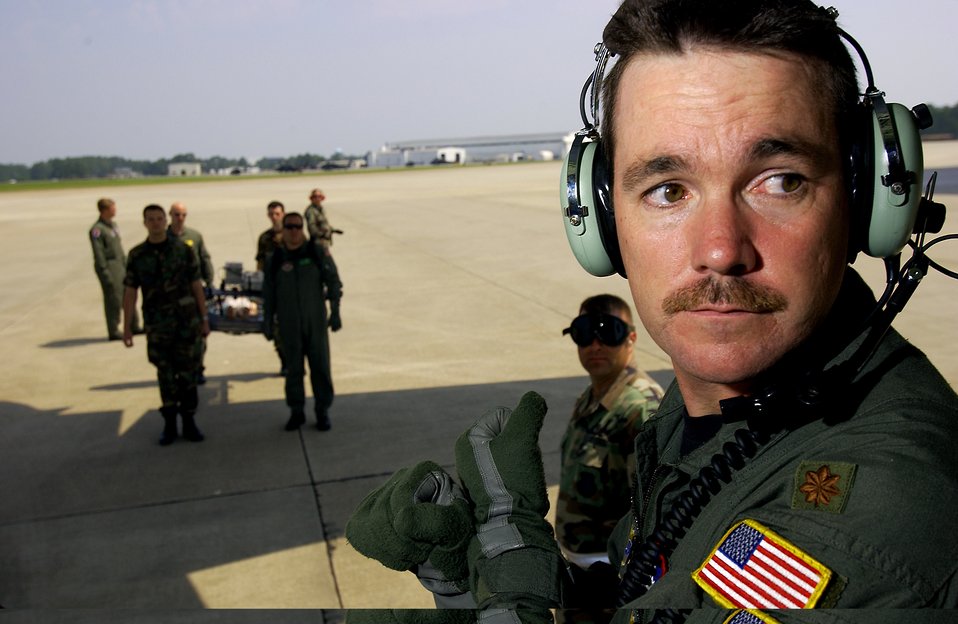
Patiently waiting

GULFPORT, Miss. -- Maj. Barry Pettite stalls an emergency medical crew carrying a "patient" to a C-130 Hercules during Exercise Lifesaver 2005 here May 24. Major Pettite is a medical crew director from the 183rd Aeromedical Evacuation Squadron in Jackson.